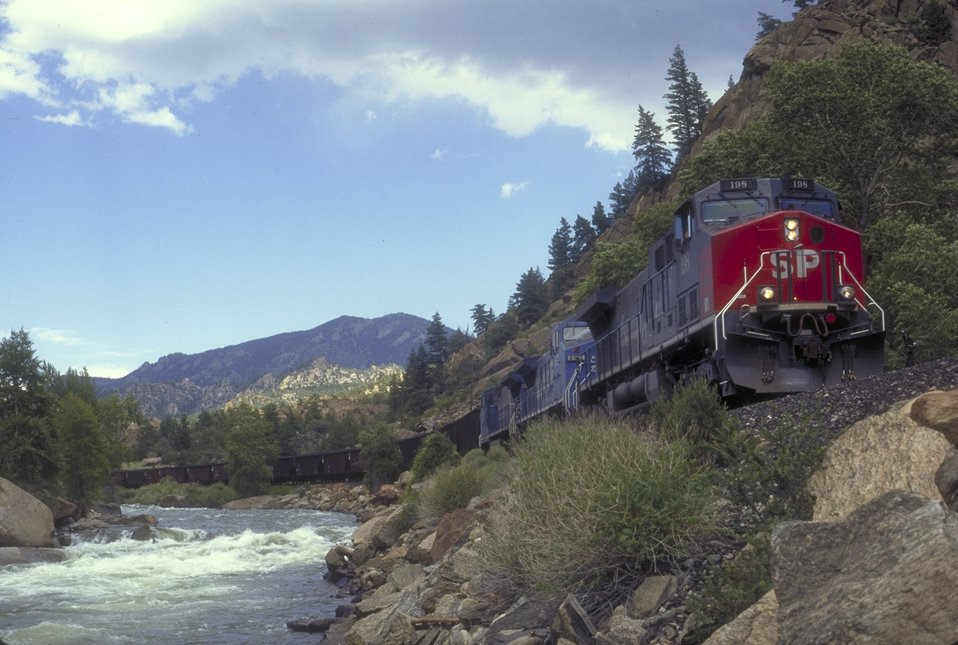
Train along the Arkansas River.